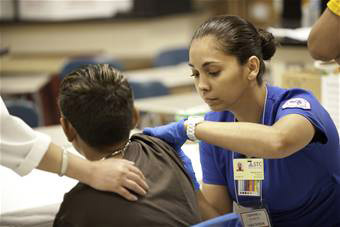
Operation Lone Star

Veronica Garcia, in the nursing program at South Texas College in McAllen, Texas, immunizes a young resident July 28 at an Operation Lone Star site in McAllen. Ms. Garcia is one of many who volunteer their time to help those in need.